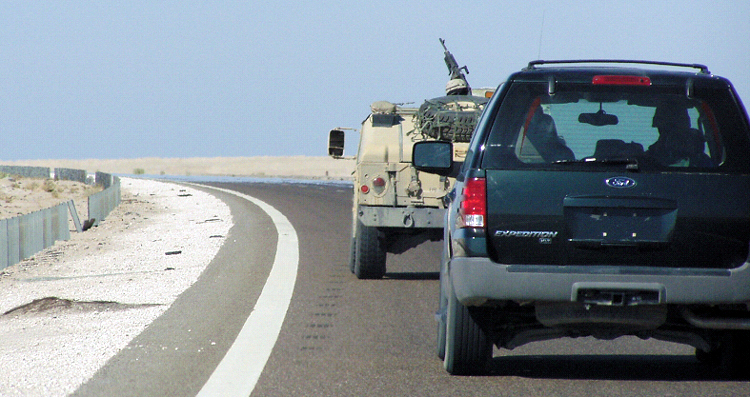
Contractors get

IRAQ -- A convoy vehicle is led by armed forces through Iraq so deployed contractors from Elmendorf Air Force Base, Alaska, can buy supplies.